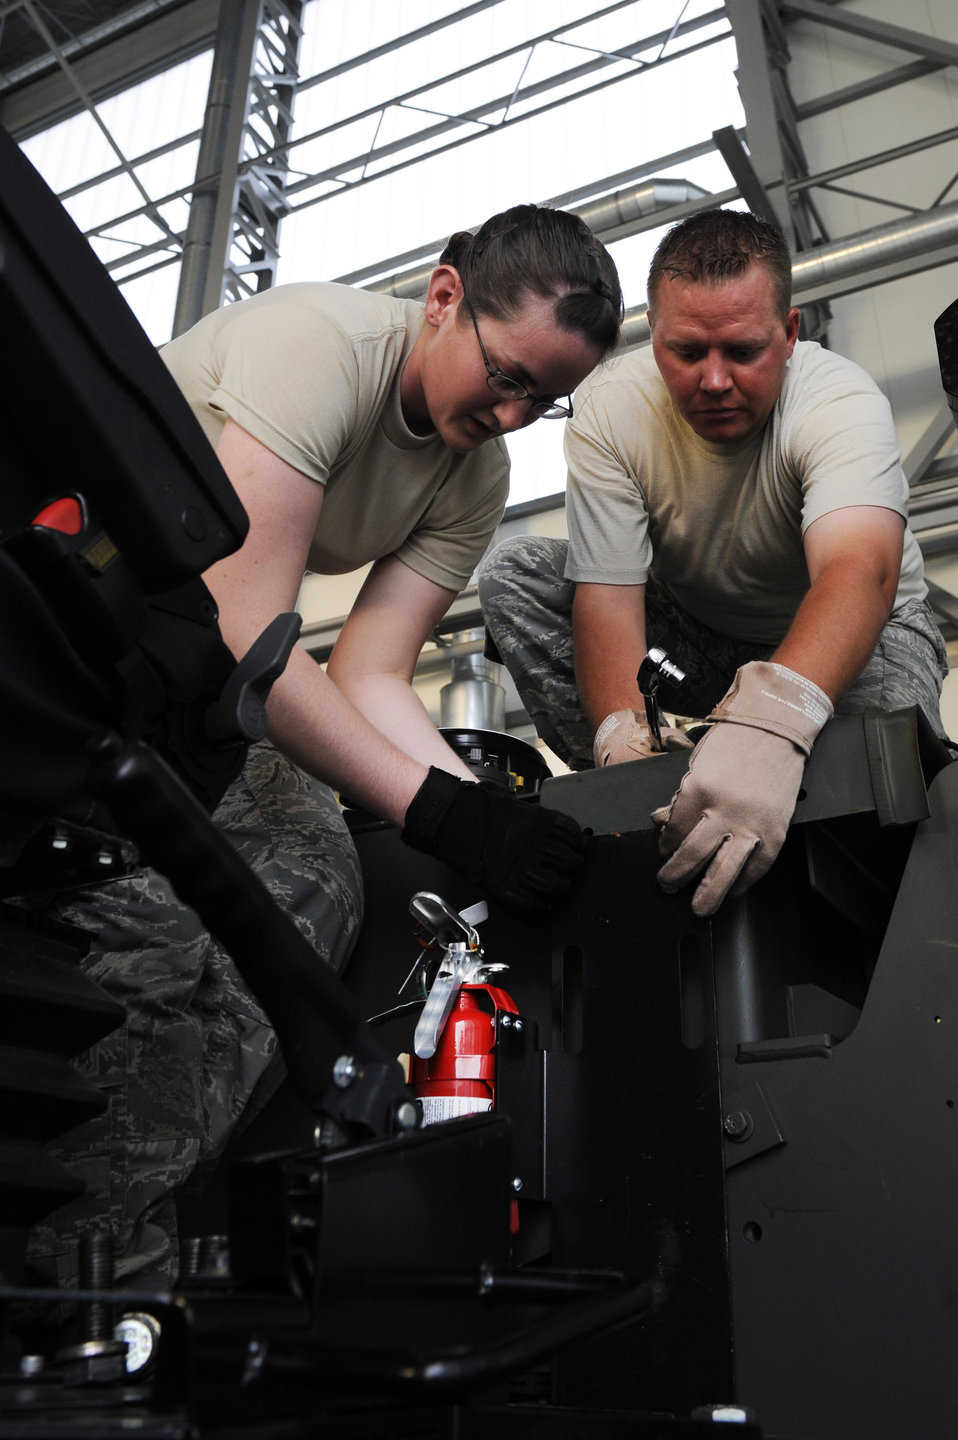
Exercise Screaming Eagle IV

Staff Sgts. Sarah Thompson and Jess Knutson move the dashboard on a 10K all-terrain forklift during Operation Screaming Eagle IV at Powidz Air Base, Poland, July 25, 2012. Screaming Eagle IV is a training exercise designed to strengthen partnerships between the U.S. and Polish armed forces while allowing U.S. Airmen from Ramstein Air Base, Germany, to train in scenarios that are difficult to conduct at home station. Both Thompson and Knutson are 435th Air Mobility Squadron air transportation specialists.